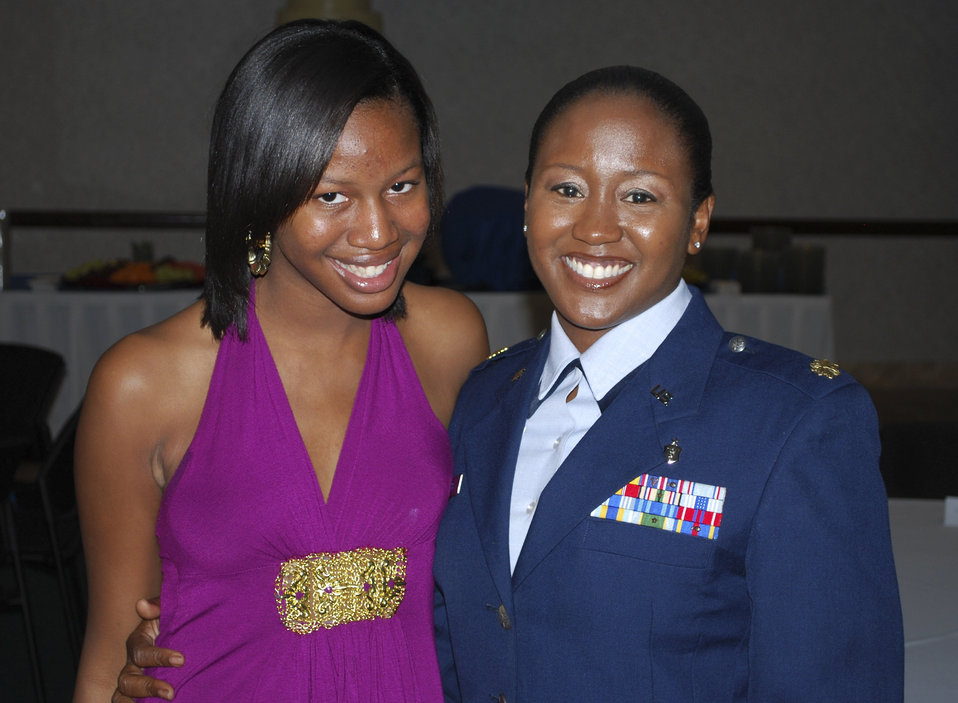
Single moms juggle military, home demands

Maj. Spring Myers, a single mother of two, spends time with her 17-year-old daughter, Autumn, May 18, 2010, before deploying to Iraq. Major Myers is one of the more than 15,000 single parents in the Air Force.